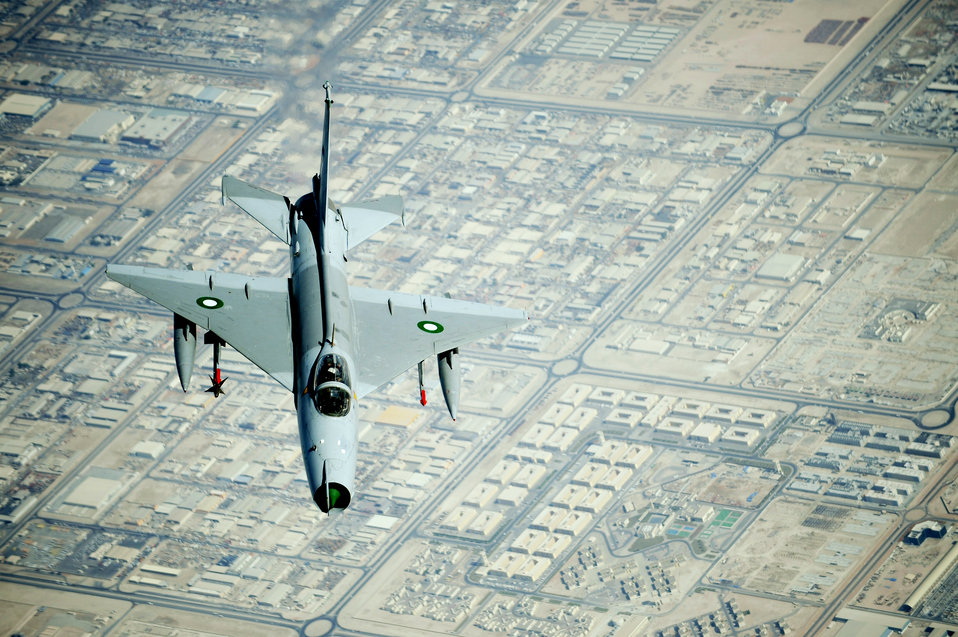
Airmen create partnerships in multinational exercise

A Pakistani F-7 conducts a training mission during a multinational exercise, Dec. 9, 2009, in Southwest Asia. Aircrews from France, Jordan, Pakistan, the U.K., and the U.S. trained together in the Air Forces Central area of responsibility in fighting a large-scale air war.